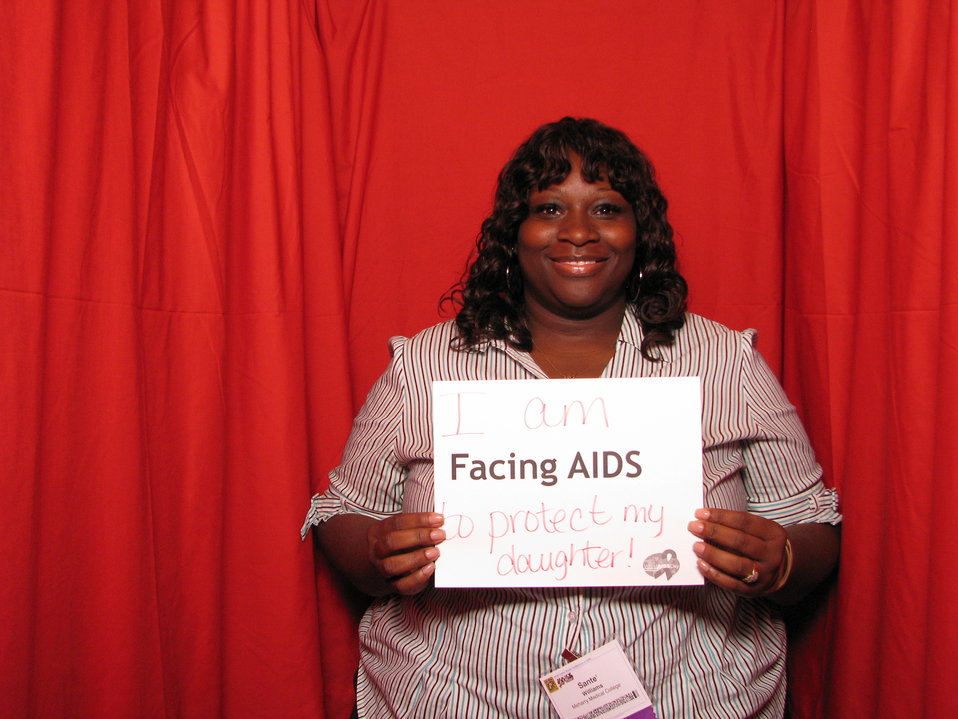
I am FACING AIDS to protect my daughter!

From the AIDS.gov photo booth at the U.S. Conference on AIDS, September 2010 (Orlando, FL).